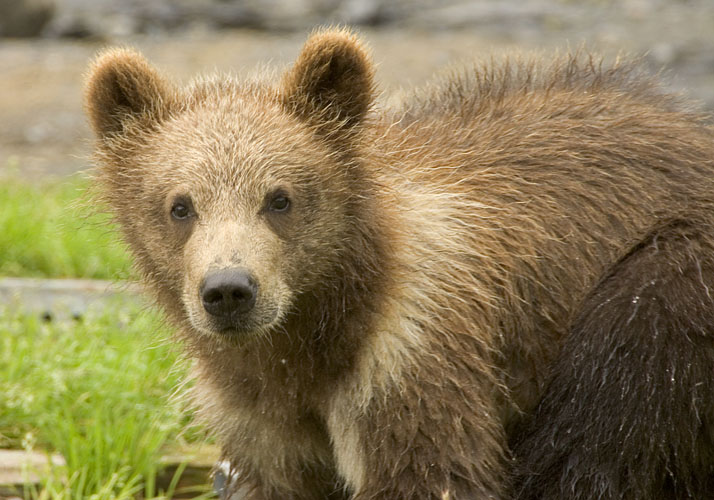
Kodiak Brown Bear

Kodiak National Wildlife Refuge- Wildlife